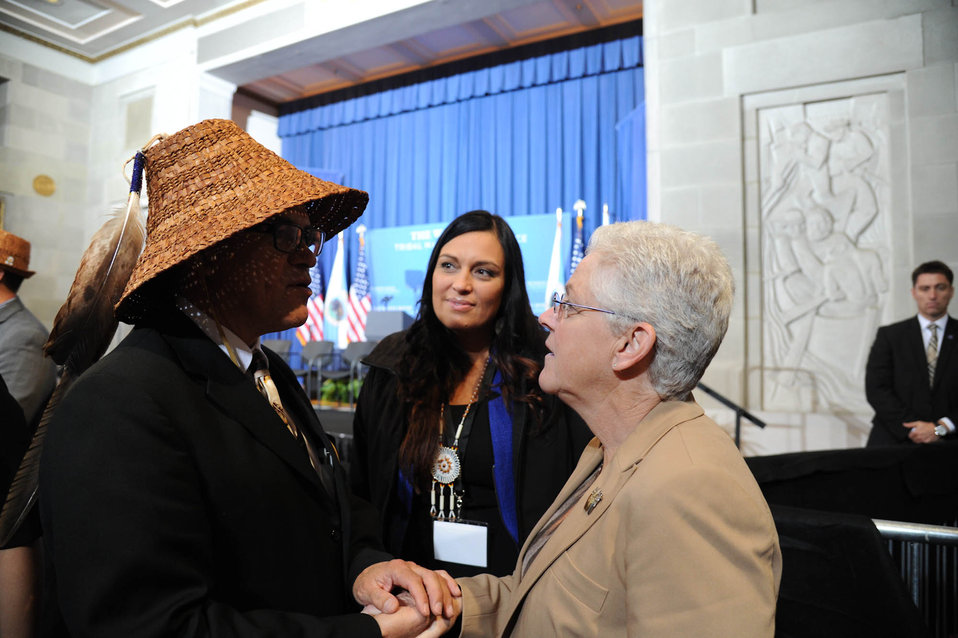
November 13, 2013 - Administrator McCarthy attends White House Tribal Conference

Administrator McCarthy joined President Obama and other administration officials at the White House Tribal Conference on November 13, 2013. The Conference was attended by leaders of 566 federally recognized tribes and members of the White House Council on Native American Affairs.